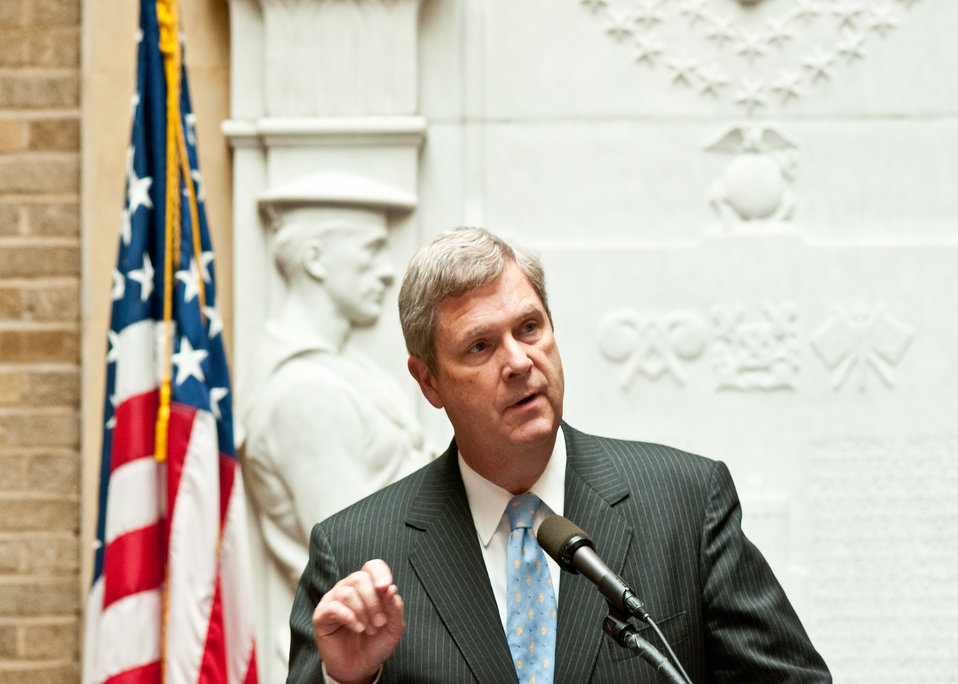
Agriculture Secretary Tom Vilsack welcomes U.S. Department of Agriculture employees to the kick-off of the USDA 2011 Combined Federal Campaign “Compassion of Individuals, Power of Community” at the USDA in Washington, DC, Wednesday, September 21, 2011. The theme of the 2011 campaign is “Celebrating 50 Years of Caring, Serving and Giving.” Behind Secretary Vilsack is a memorial to the U.S. Department of Agriculture World War One employees who lost their lives during the “Great War.” The Federal Combined Campaign exhibits represented organizations serving military personnel and their families.